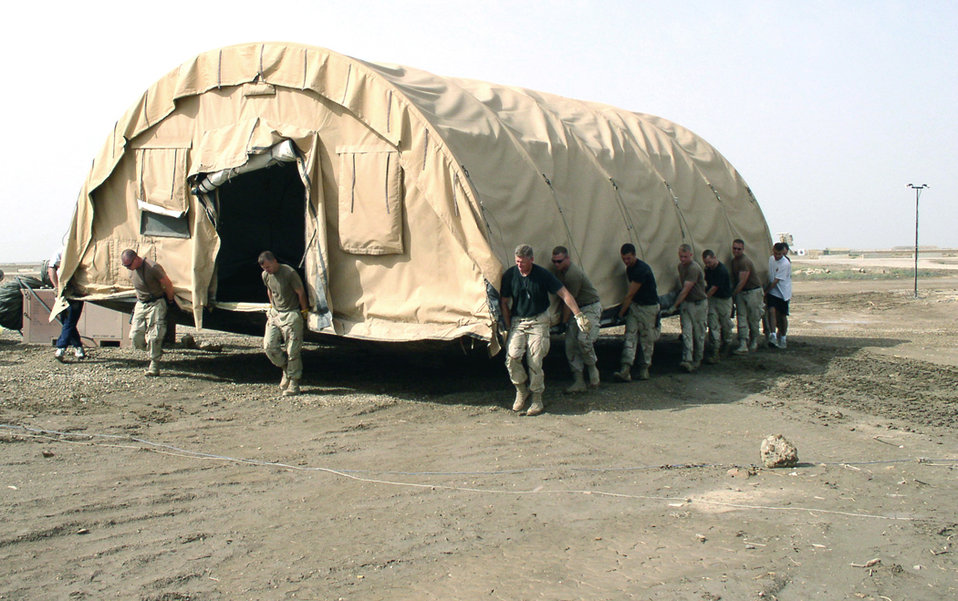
Moving day

TALLIL AIR BASE, Iraq -- Airmen from the 407th Expeditionary Civil Engineer Squadron's fire department here move a tent to a freshly poured concrete pad. As part of an ongoing fire department upgrade, seven pads were poured to improve Airmen's living quarters.